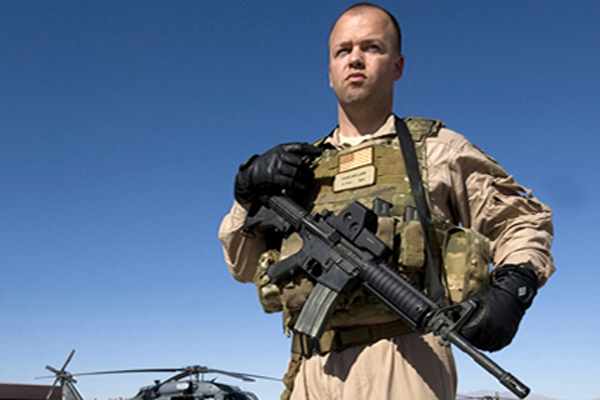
Wounded Warrior

Staff Sgt. David Mullikin stands in front of an HH-60 Pave Hawk, in full operational gear June 23, 2011, at Nellis Air Force Base, Nev. Sergeant Mullikin is a flight engineer assigned to the 66th Rescue Squadron. He returned from a tour in Iraq suffering from post-traumatic stress disorder and got help through the Air Force Wounded Warrior program.